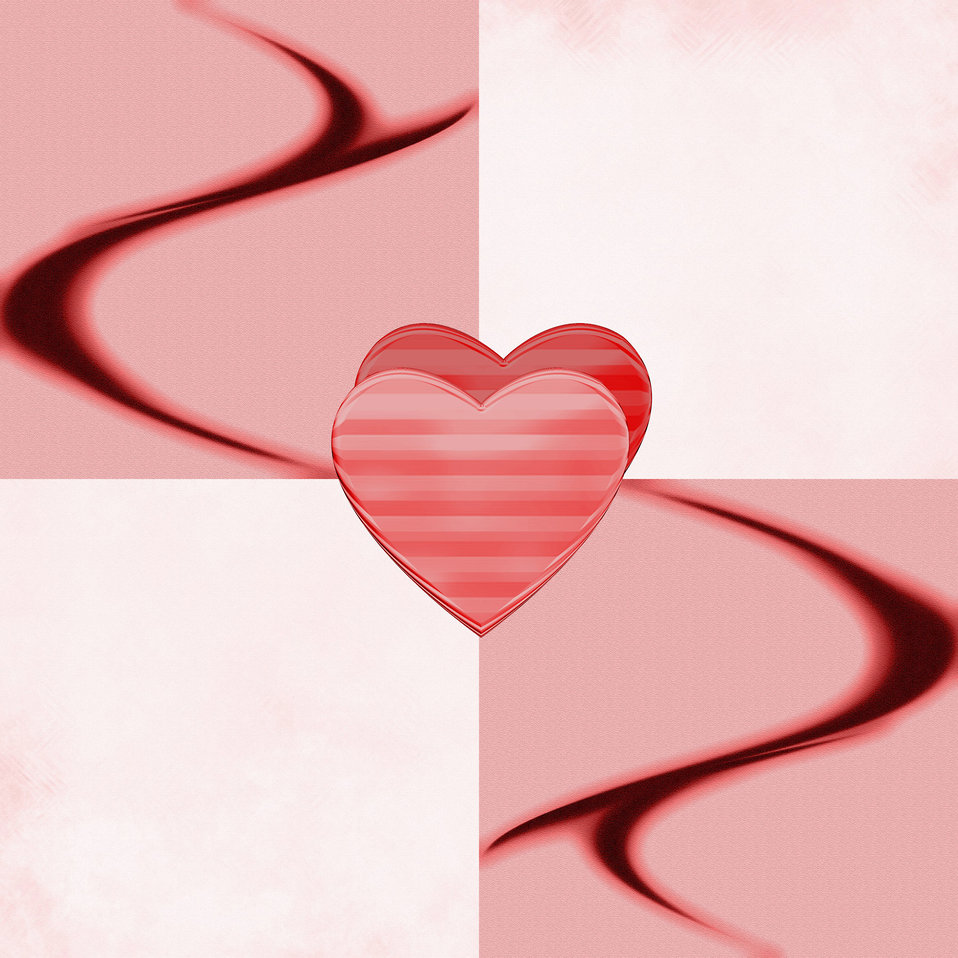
Valentine 2013 - paper # 9

Valentine background - 12" x 12" - 300 dpi.